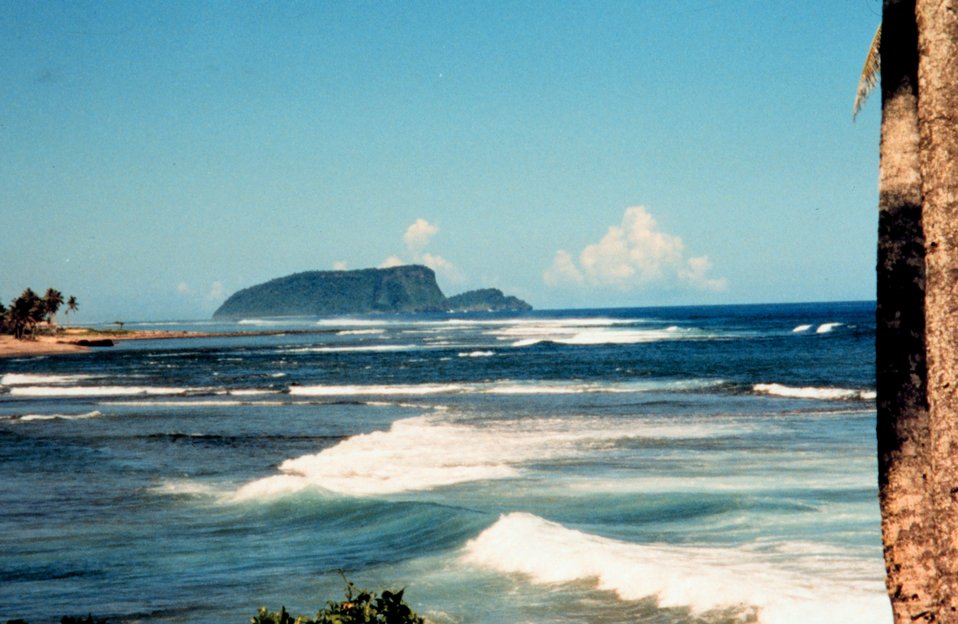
Coastal view in Western Samoa